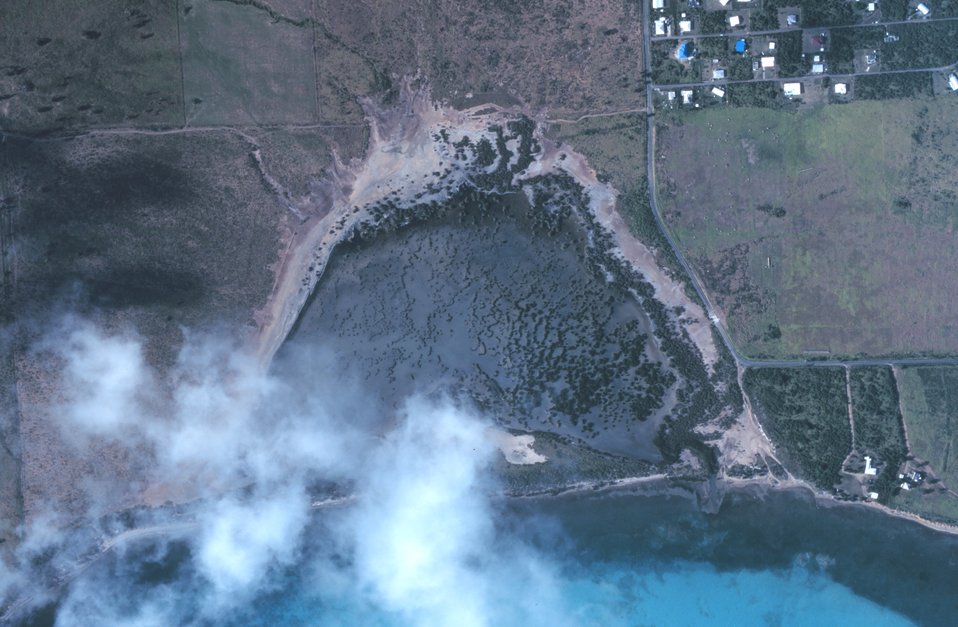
Great Pond Bay along the south coast of St. Croix.